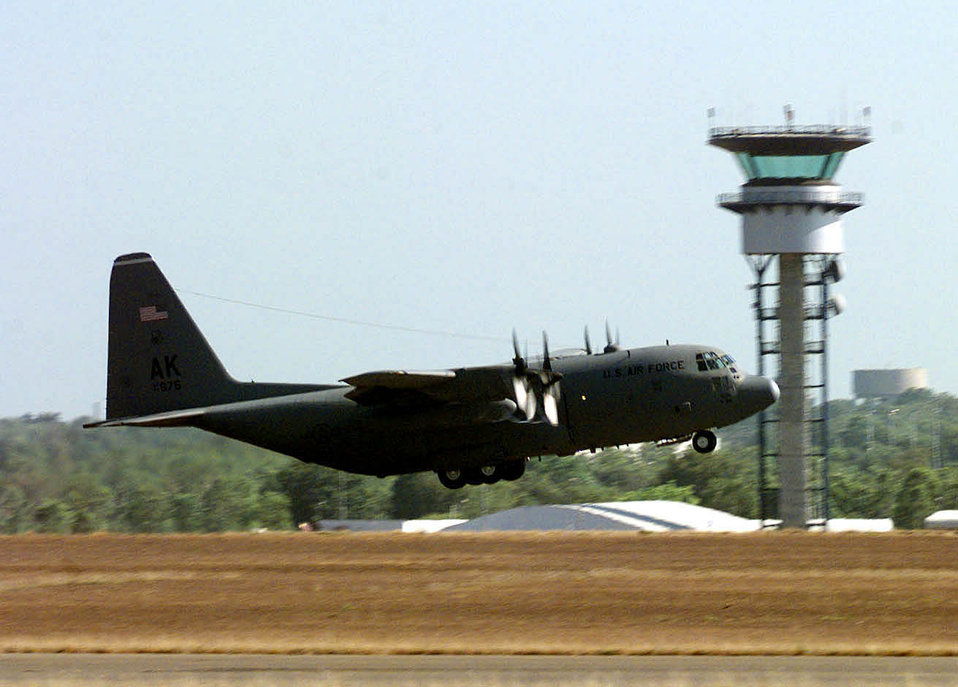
Down under

DARWIN ROYAL AUSTRALIAN AIR FORCE BASE, Australia -- A C-130 Hercules from the 517th Airlift Squadron, Elmendorf Air Force Base, Alaska, takes off for a morning mission to Dili, East Timor. The Air Force is providing logistics, communications, and planning support to International Forces East Timor. INTERFET is providing peacekeeping, humanitarian assistance and force protection to East Timor.